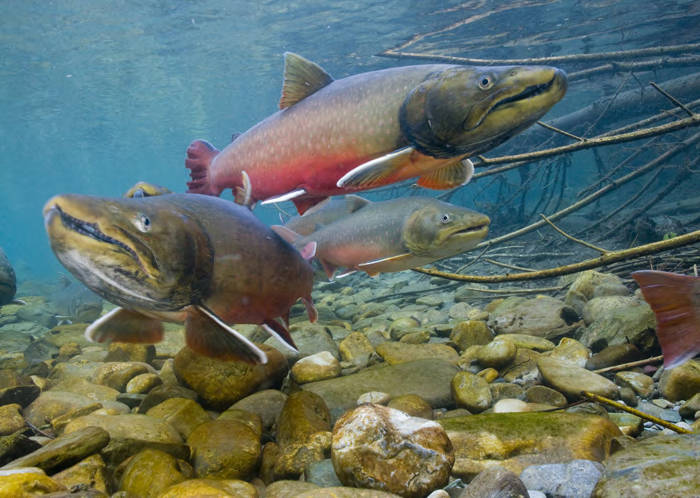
Bull Trout Underwater

Region 6 bull trout coordinator Wade Fredenberg teamed with noted Geographic photographer Joel Sartore in 2009 to capture underwater and aquarium-staged shots of bull trout in British Columbia’s Wigwam River drainage, the headwaters of the Kootenai River, known as the “crown jewel” of bull trout spawning areas.